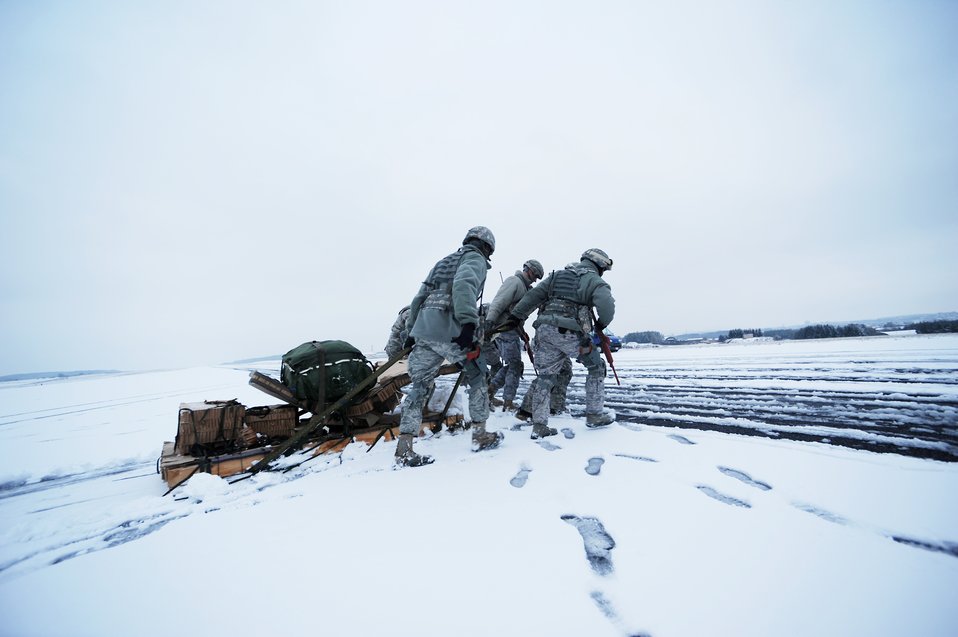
Ramstein forces practice air insertion

Airmen from the 435th Security Forces Squadron at Ramstein Air Base, Germany, secure equipment parachutes after an airborne insertion mission at Bitburg Airport Jan. 25, 2010. The unit is setting up bare-base operations as part of the dual-wing operational readiness exercise with the 86th Airlift Wing in September.